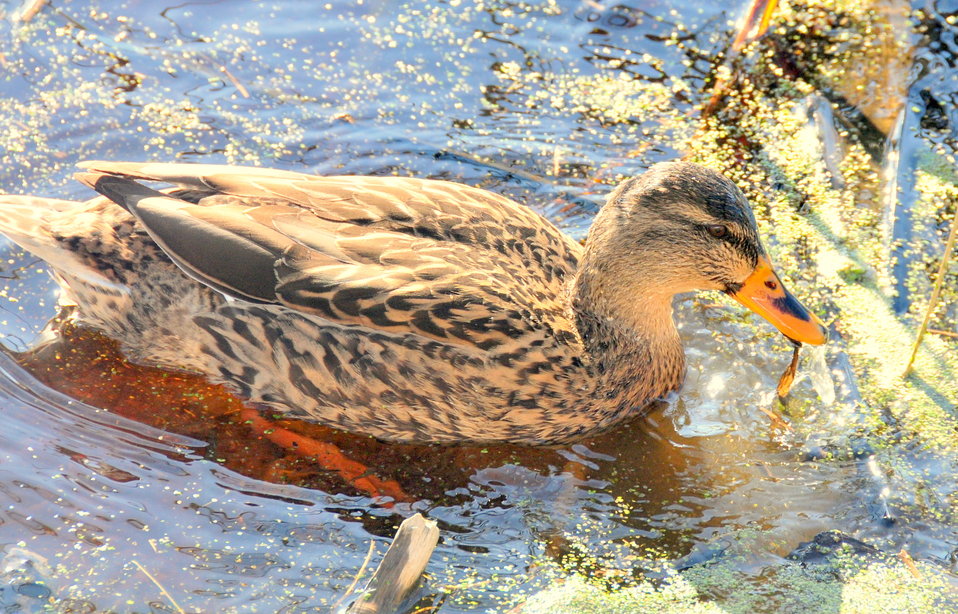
Mallard Hen